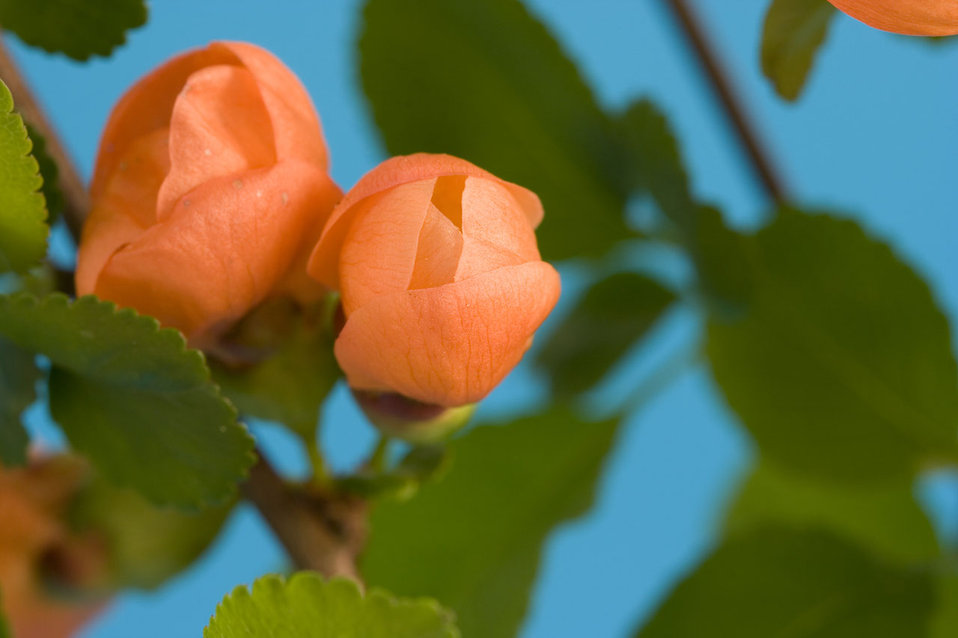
Flower buds

A couple of orange flower buds.